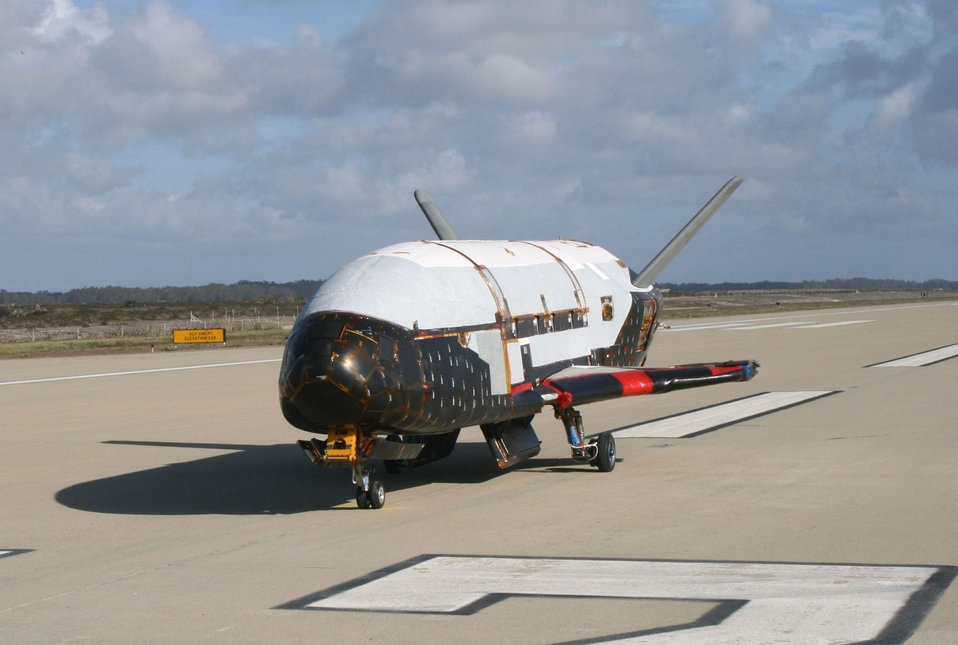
X-37 Orbital Test Vehicle

In a testing procedure, the X-37B Orbital Test Vehicle taxis on the flightline in June 2009 at Vandenberg AFB, Calif.